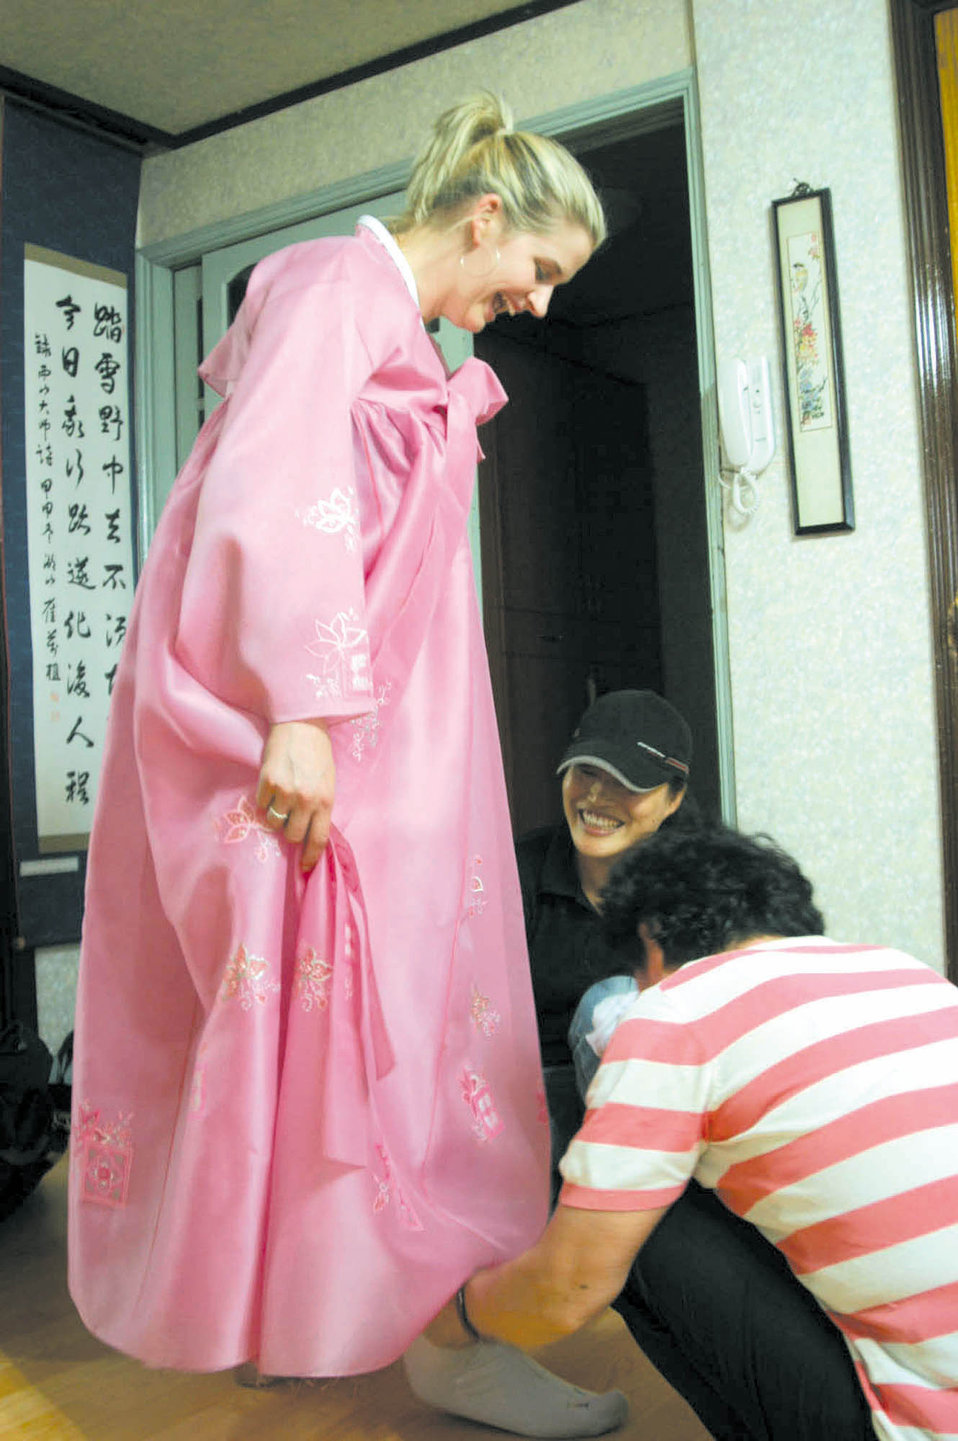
Airmen share culture with South Koreans

JEONJU CITY, South Korea -- Senior Airman Jennifer Babb is fitted with a traditional Korean dress during her stay with the Ko family here as part of the Korean Red Cross Cultural Awareness Program. Airmen learned about Korean customs and traditions and shared their American customs with the families. Airman Babb is assigned to the 8th Aircraft Maintenance Squadron at nearby Kunsan Air Base.